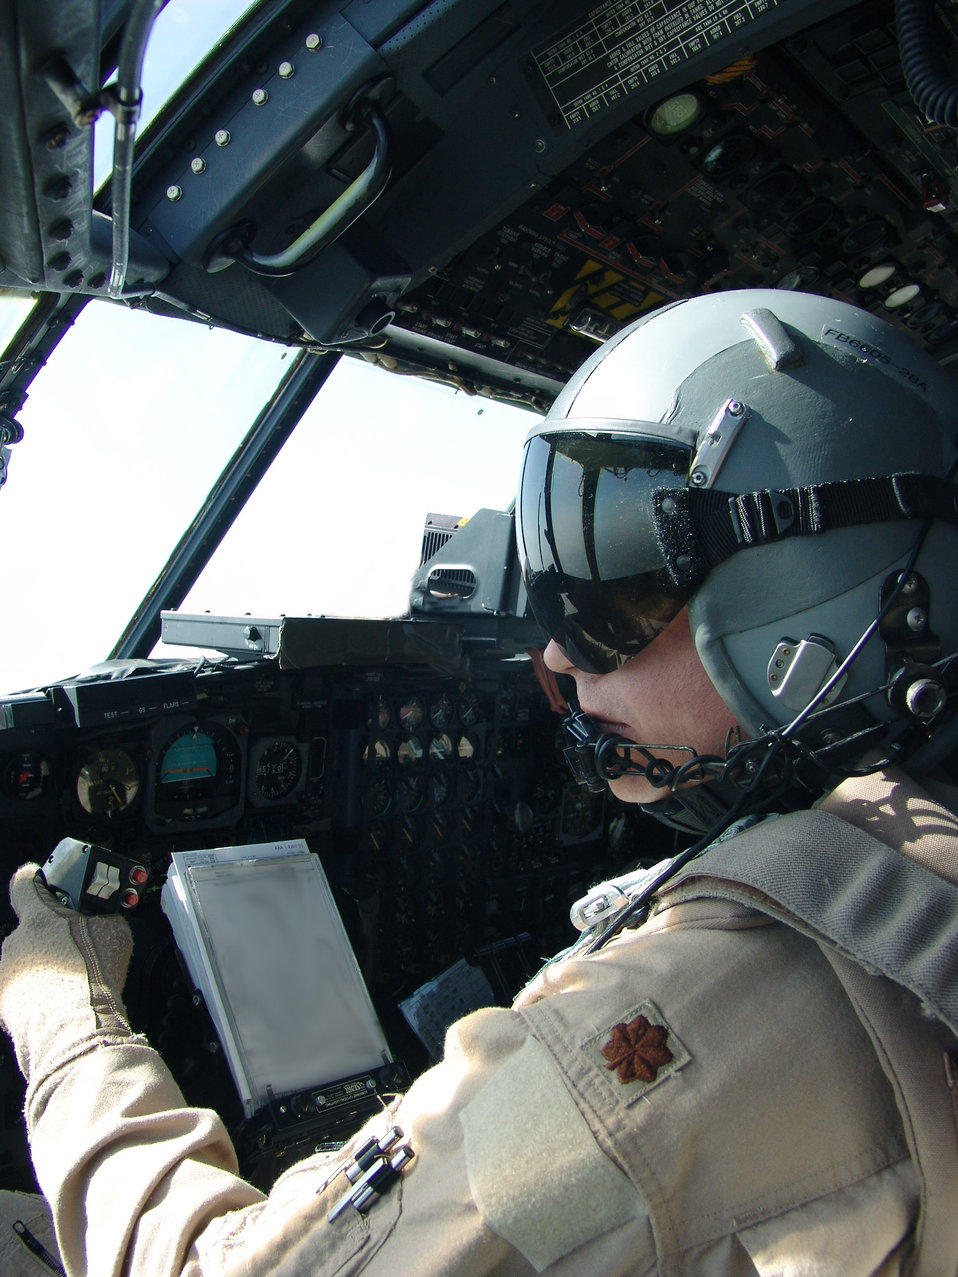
Into Iraq

OVER IRAQ -- Maj. Erik Thorell scans the horizon before landing in Iraq on Oct. 25. He is a pilot assigned to the 386th Expeditionary Airlift Squadron at a forward-deployed location. Major Thorell is deployed supporting Operation Iraqi Freedom from the 440th Airlift Wing at the General Mitchell Air Reserve Station, Wis.